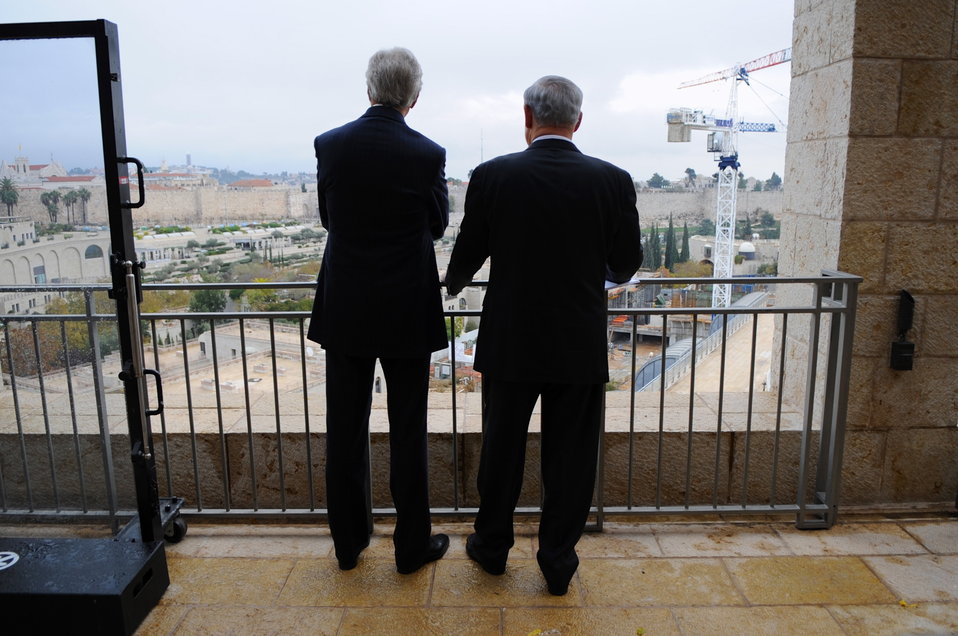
Secretary Kerry Chats With Israeli Prime Minister Netanyahu

U.S. Secretary of State John Kerry and Israeli Prime Minister Benjamin Netanyahu look out at Jerusalem's Old City before a meeting on December 6, 2013.